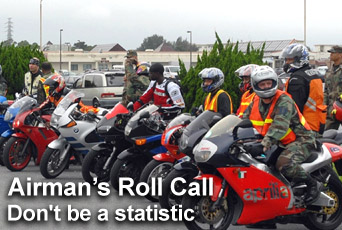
Airman's Roll Call: Don't become a statistic

Whatever your plans may be this Independence Day weekend, everyone should have fun, but play it safe. Even everyday activities like driving an automobile or riding a motorcycle -- when combined with excessive speed or alcohol -- can yield deadly results. This week's Airman's Roll Call provides some thoughts to keep in mind as you make plans for this -- or any -- holiday weekend.